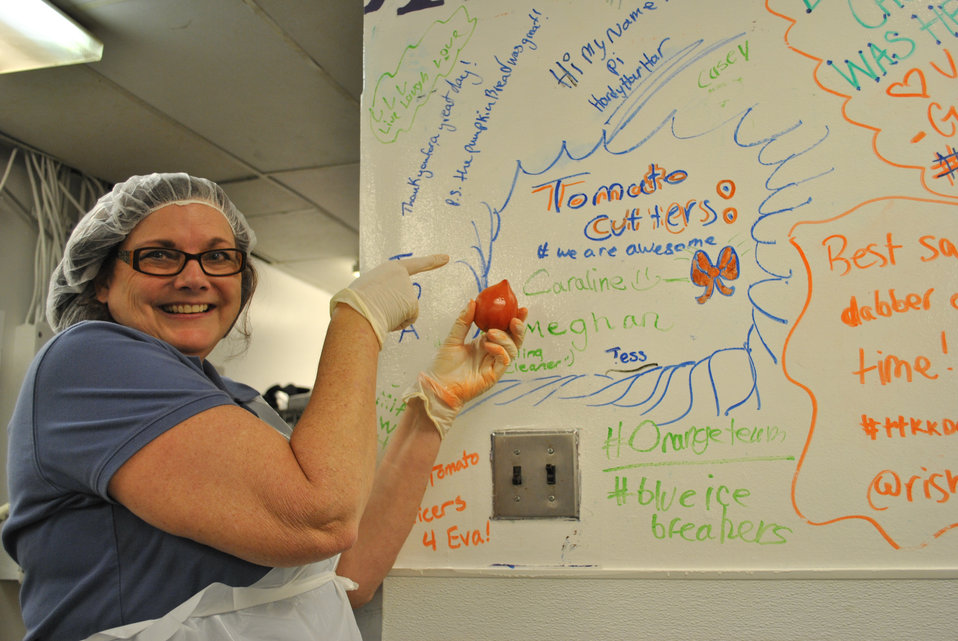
After spending three hours chopping tomatoes, U.S. Department of Agriculture (USDA) Rural Development (RD) volunteer Andrea Jenkins can relate to the message on the wall of DC Central Kitchen that reads “tomato cutters: “weareawesome.”